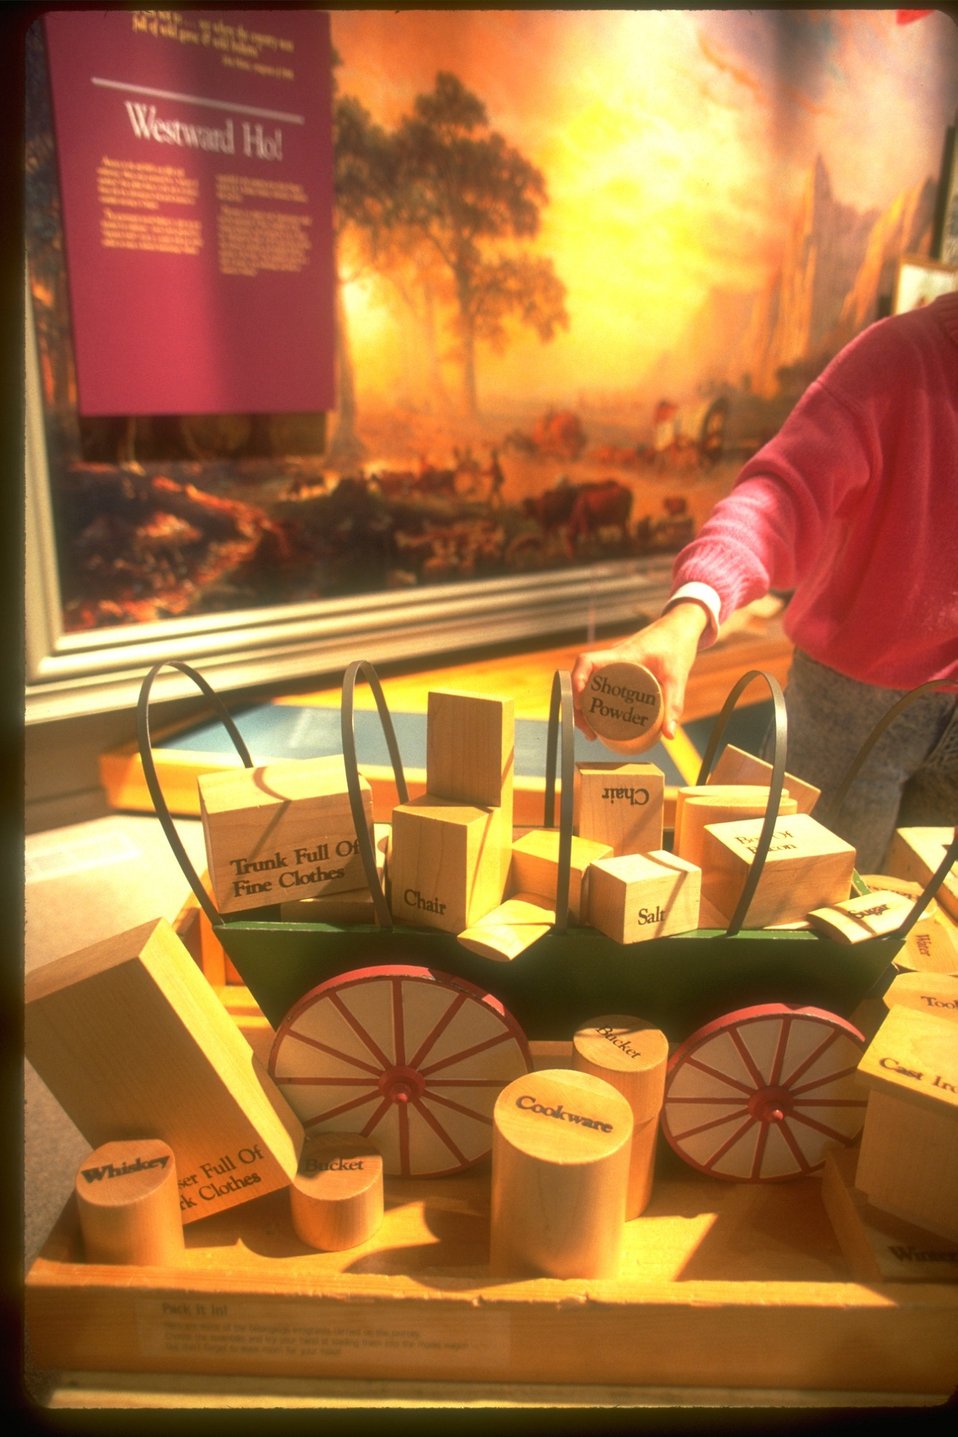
You pack it" interactive exhibit at the NHOTIC. Small wagon with many small boxes used to identify what would be on a wagon from the Oregon Trail.